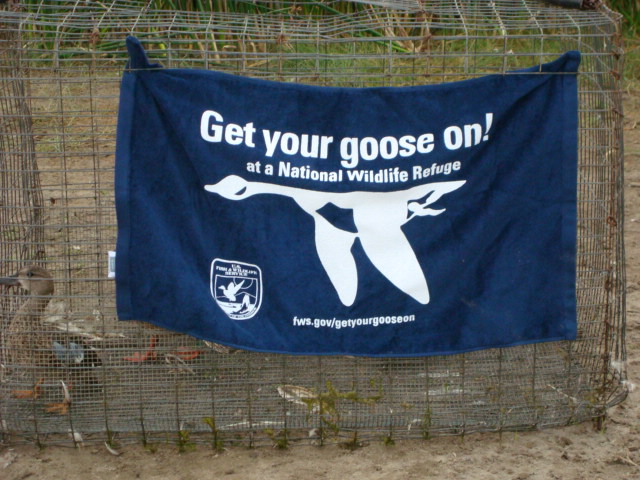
GYGO! - Duck Banding Style

Ducks waiting to be banded and released.